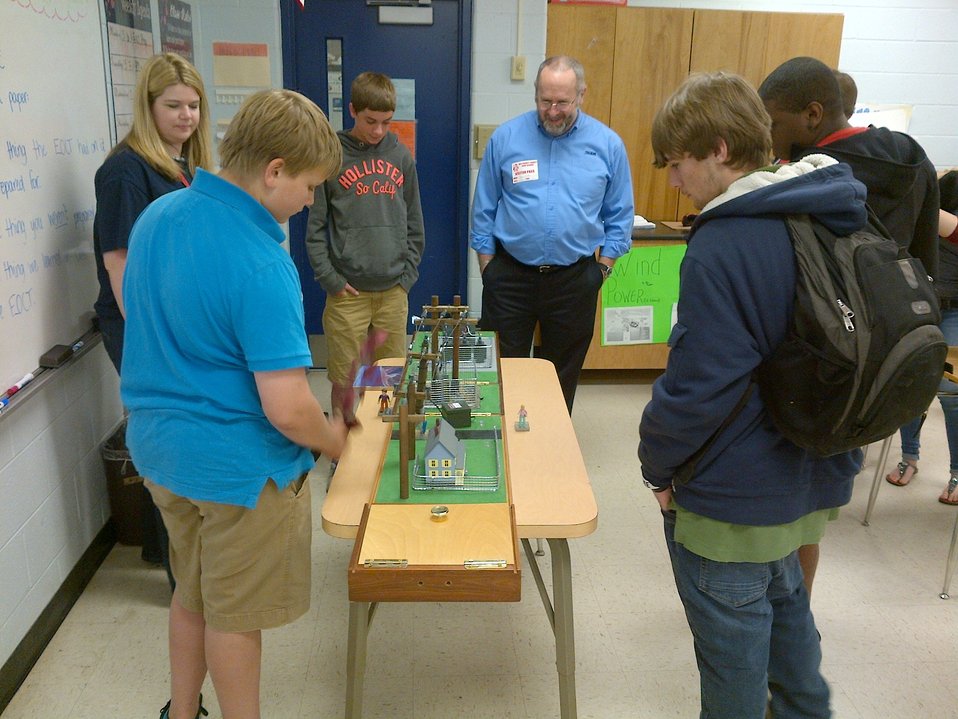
OglethorpeCountyHSvisit1